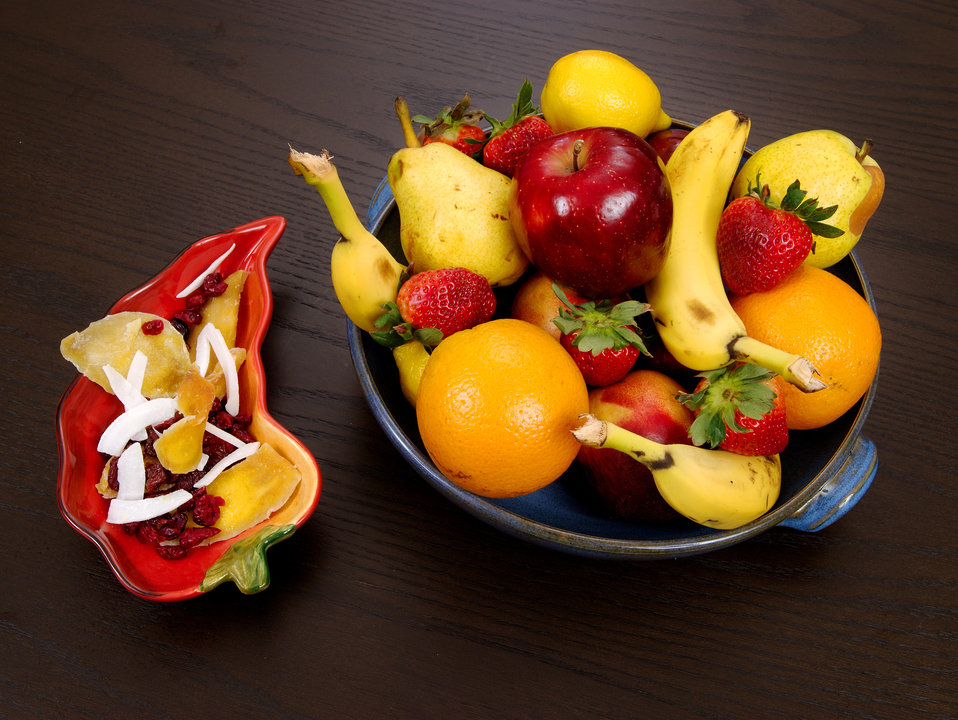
Here we have as serving dish of dried fruits, next to a bowl of fresh fruits. Comparatively, both are a healthy food choice, but because the drying process can remove some of the healthy, naturally-occurring nutrients found in fresh fruits, it's usually the fresh, unprocessed fruits that are the best choice. However, dried fruits do have some real benefits including concentrated antioxidants and a number of minerals, and a greater amount of fiber per serving than their fresh counterparts, and are an overall better choice than sugary, processed snacks.